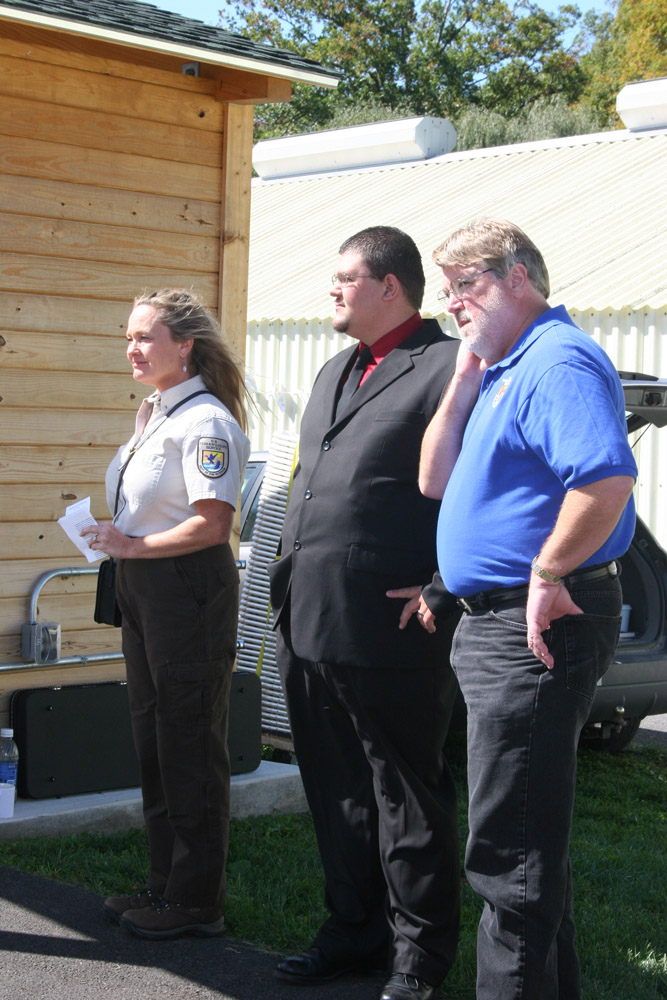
Freshwater Folk Festival

The 5th Annual Freshwater Folk Festival at White Sulphur Springs National Fish Hatchery in West Virginia.Credit: USFWS